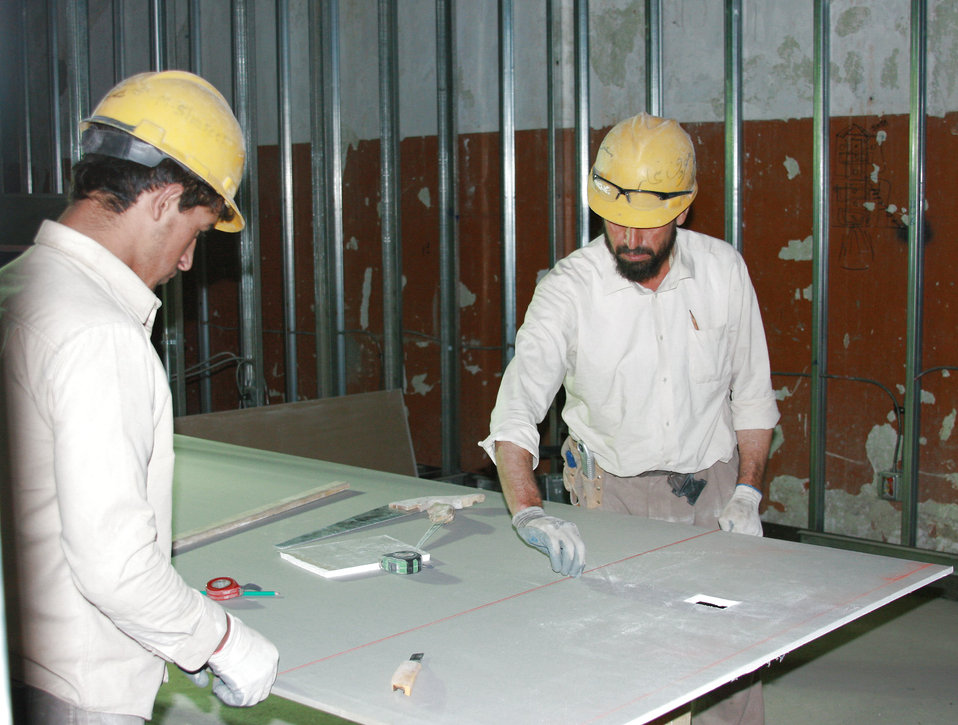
Engineer team plans Bagram's future

Two Afghan workers cut drywall for rooms inside a new $2.7 million Combined Joint Task Force-101 administrative building at Bagram Airfield, Afghanistan. Bagram's facility engineer team employs approximately 1,000 Afghan nationals at any given time.